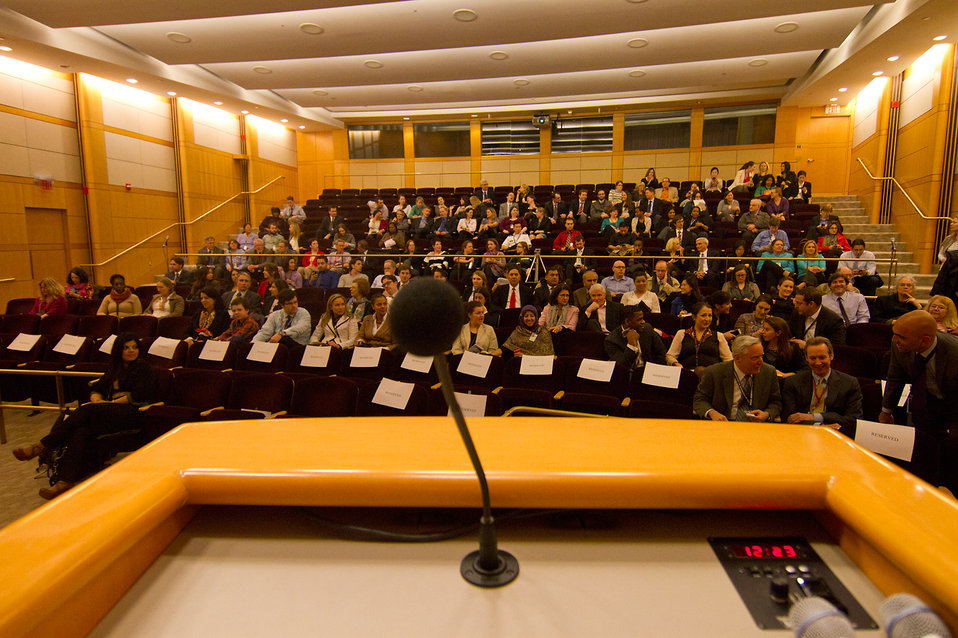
The Stars and Producer of Buzkashi Boys Visit the State Department

The stars and producer of the Oscar-nominated film Buzkashi Boys visit the U.S. Department of State in Washington, D.C., for a screening and Q and A on February 28, 2013.